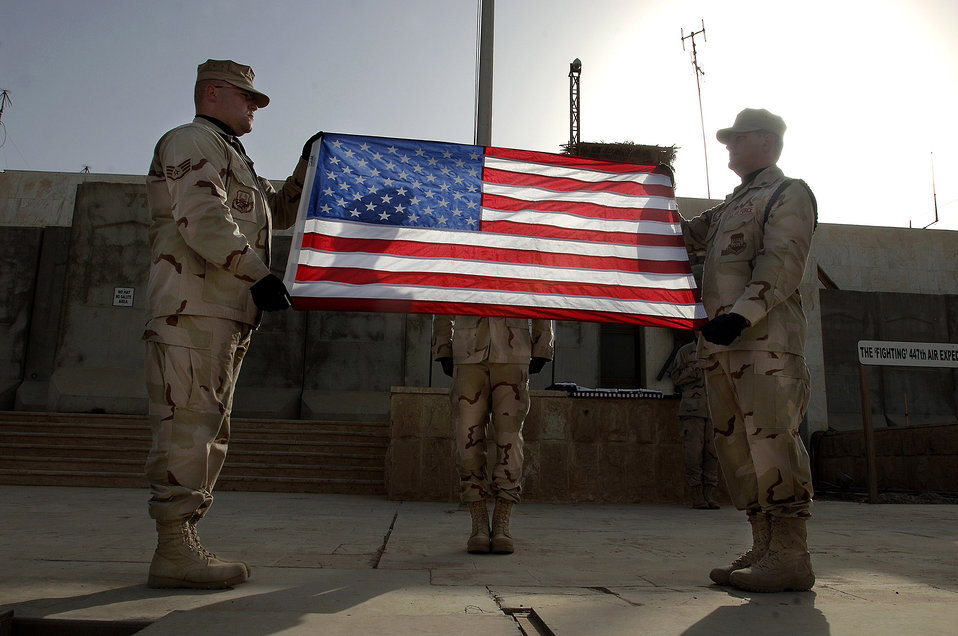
Honoring the flag

Staff Sgt. Andrew Keller (left) and Maj. Shannon Kolnsberg prepare to fold a U.S. flag as Staff Sgt. Jody Nitz remains at attention during an official flag raising and folding ceremony April 21 in Baghdad, Iraq. The Sather Air Base Honor Guard raised and folded 23 U. S. flags. The three Airmen are assigned to the 447th Expeditionary Medical Squadron.